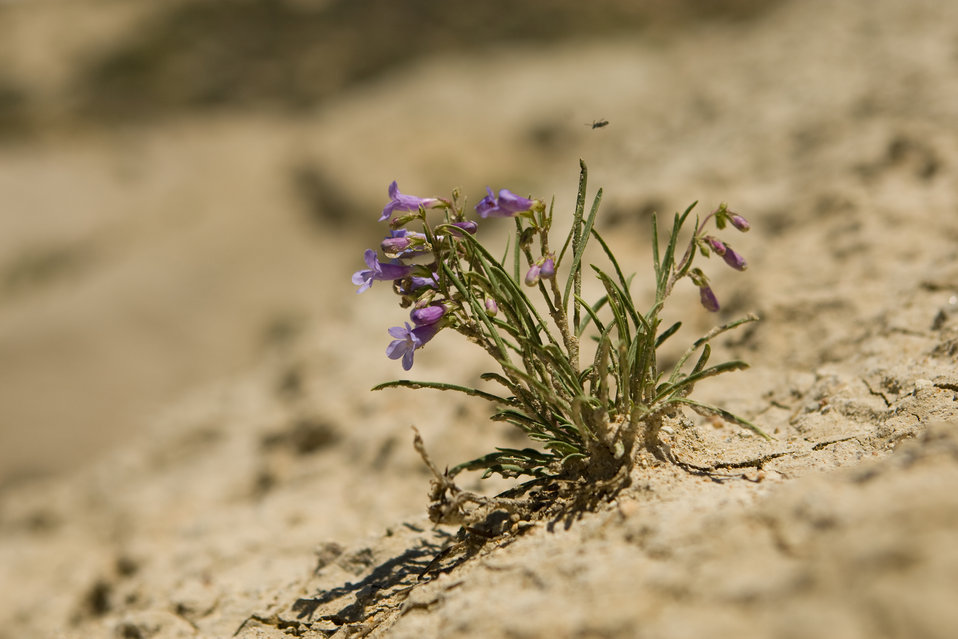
Colorado Rare Plant Conservation Initiative

The Colorado Rare Plant Conservation Initiative (RPCI) is a partnership of 23 statewide and regional agencies, private organizations, and academic institutions working to conserve 121 rare plants in Colorado. As part of these efforts the group developed the Colorado Rare Plant Conservation Strategy, developed Best Management Practices to reduce energy development impacts, addressed climate change, and developed focused strategies for the conservation of individual species at eight priority landscapes. The group has also worked to coordinate volunteer efforts for plant conservation across the state.